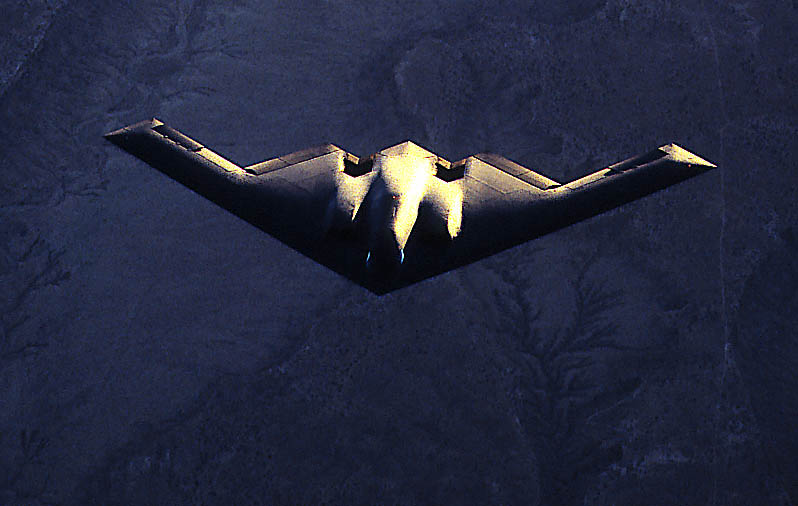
B-2 Spirit

FILE PHOTO -- The B-2 Spirit bomber is a multi-role bomber capable of delivering both conventional and nuclear munitions. A dramatic leap forward in technology, the bomber represents a major milestone in the U.S. bomber modernization program. The B-2 brings massive firepower to bear, in a short time, anywhere on the globe through previously impenetrable defenses.